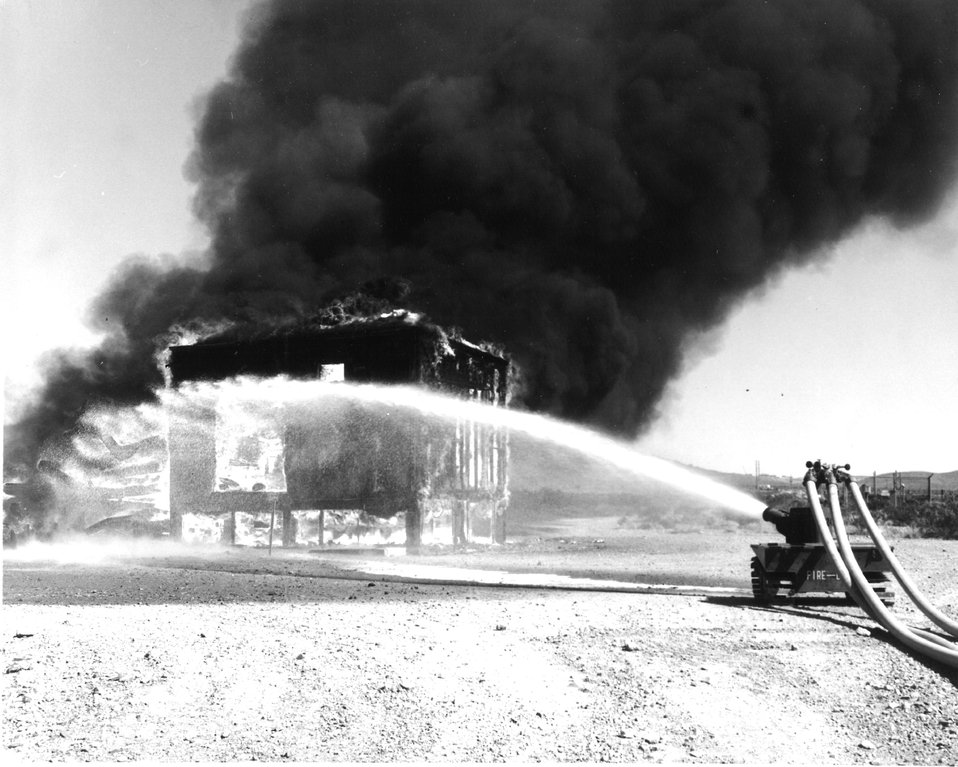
The Firecat, newest piece of equipment of its kind in the AEC or in the Mercury, Nev., Fire Department's inventory is shown during a demonstration at a controlled burn. c. undated